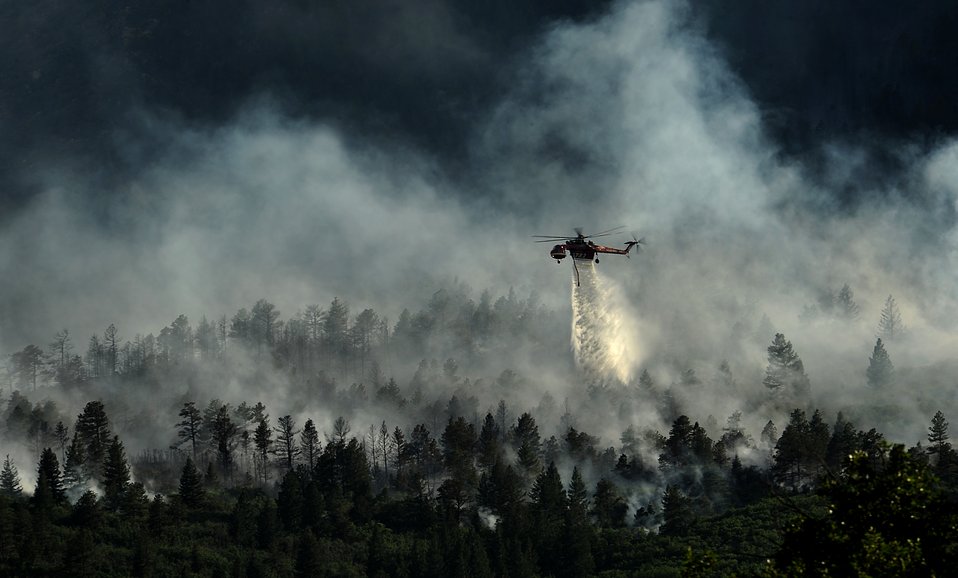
Waldo Canyon Fires

A helicopter drops water on the fire as firefighters continued to battle the blaze that burned into the evening hours in Waldo Canyon on the U.S. Air Force Academy June 27, 2012. The fires, which have burned more than 15,000 acres, began spreading to the southwestern corner of the Academy in the early morning, causing base officials to evacuate residents. Officials estimated that the fire had spread to about 10 acres of land belonging to the Academy. U.S. Air Force Photo by: Master Sgt. Jeremy Lock)